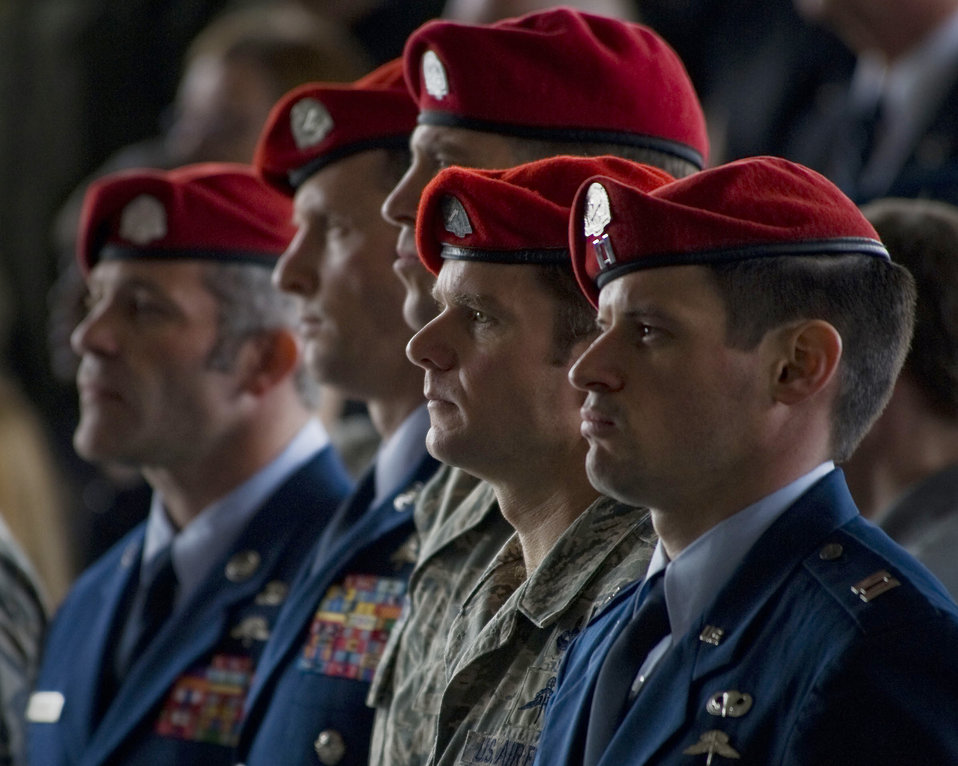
Fallen pilot 'has come home'

Airmen from the special operations community gather at a memorial service at Hurlburt Field, Fla., Feb. 28, 2012. The ceremony honored the lives of Capt. Ryan P. Hall from the 319th Special Operations Squadron, Capt. Nicholas S. Whitlock and 1st Lt. Justin J. Wilkens from the 34th Special Operations Squadron, and Senior Airman Julian S. Scholten from the 25th Intelligence Squadron. The Airmen all died in a Feb. 18, 2012, U-28A crash in Djibouti.